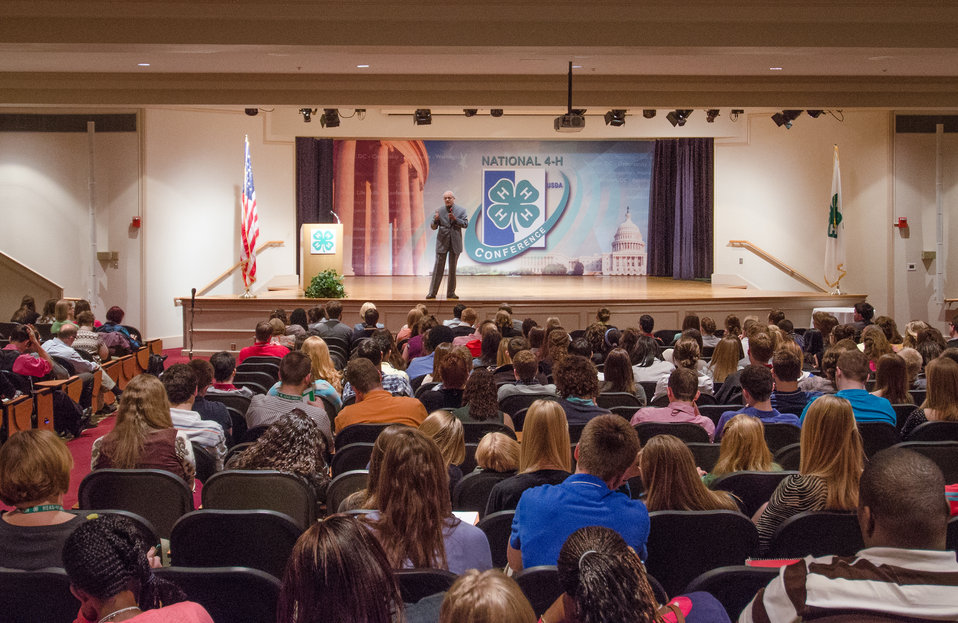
U.S. Department of Agriculture (USDA National Institute of Food and Agriculture Director Dr. Sonny Ramaswamy opened his address about to approximately 300 4-H youth members of the 2013 National 4-H Conference, with a challenge question: “What is the most daunting challenge facing humanity?” The resulting address lead to information about educational opportunities. He closed with a quote from philosopher Confucius: “Find a job you love and you will never have to work again.” on Monday, April 8, 2013 in Chevy Chase, MD. The youth delegates are in grades 10-12 (15-19 years old). The purpose of the conference is to 1) engage 4-H youth in personal development experiences that will increase knowledge, resources, and skills; 2) discuss topics affecting youth and 4-H programming nationwide; and 3) empower and mobilize 4-H youth to create positive social change in their communities in a meaningful and genuine way. The conference also reinforces the rich history of 4-H and its valuable tie to USDA, Cooperative Extension and the Land-Grant University System.